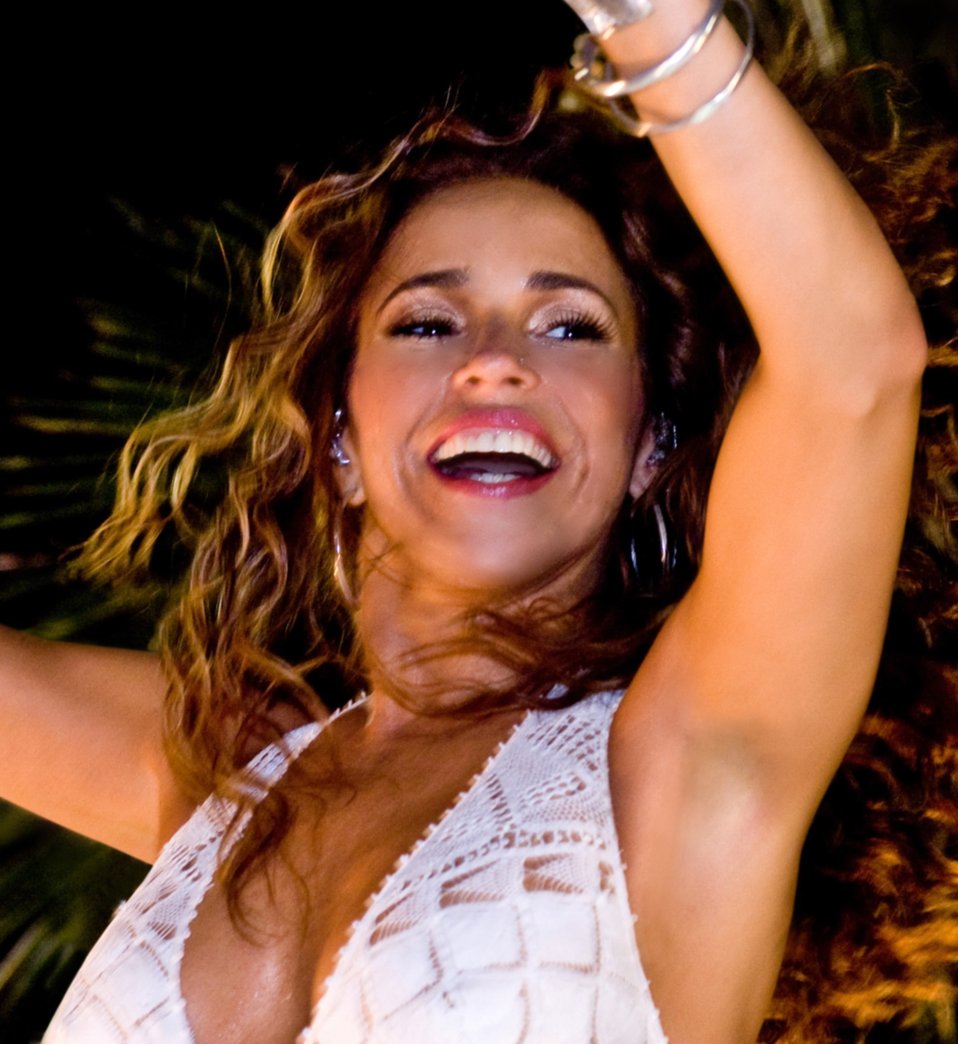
Daniela Mercury atop trio eletrico during carnaval in Salvador Bahia